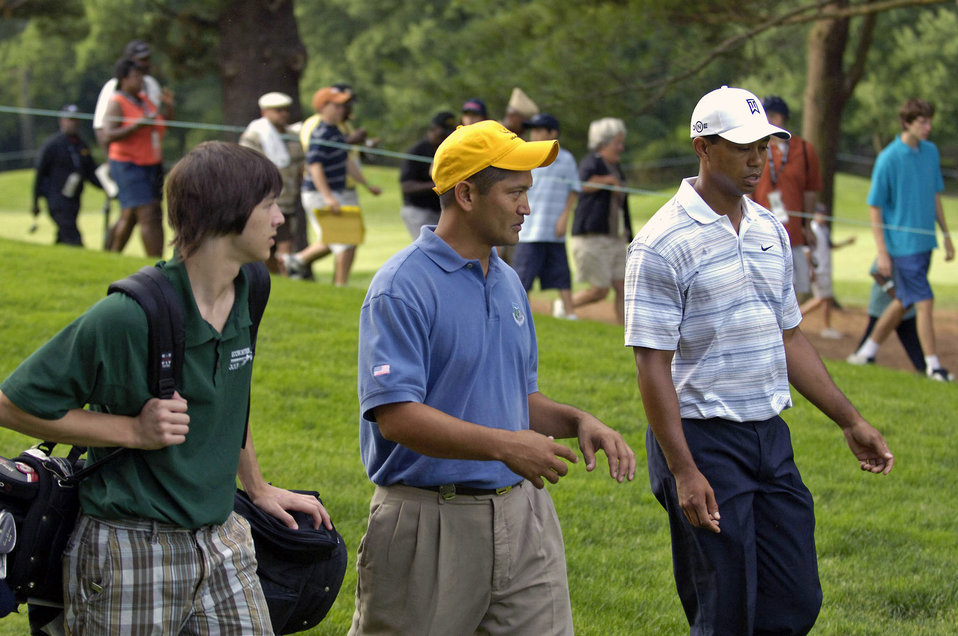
Teeing off with Tiger

Tech. Sgt.Andy Amor walks down a fairway with professional golfer Tiger Woods July 4 during a Pro-Am tournament in Bethesda, Md. Sergeant Amor was selected to represent the Air Force at the event.